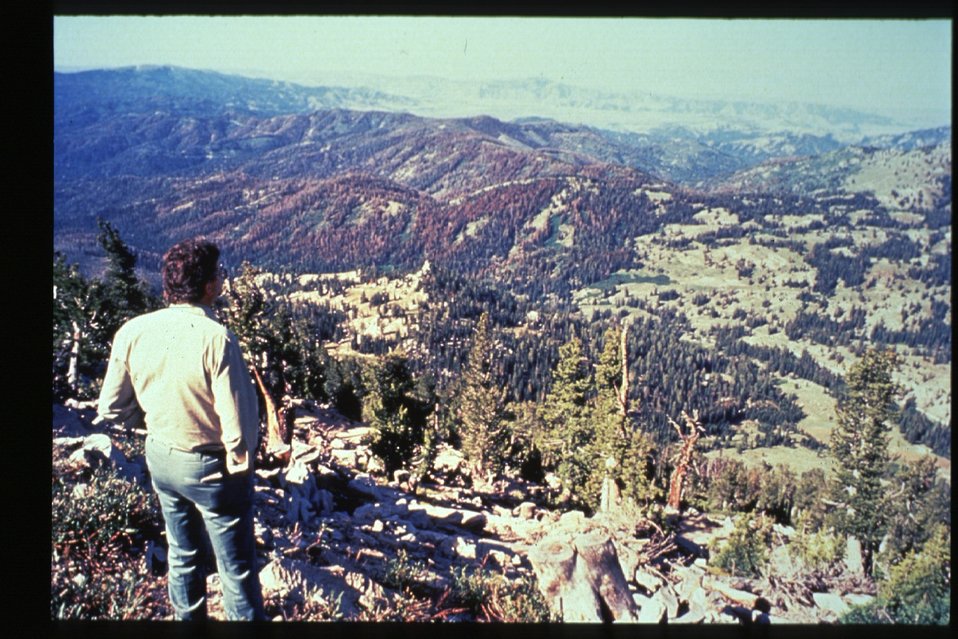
Boise Foothills Fire Danskin Mountains and South Fork of Boise River Four River Field Office LSRD Lower Snake River District